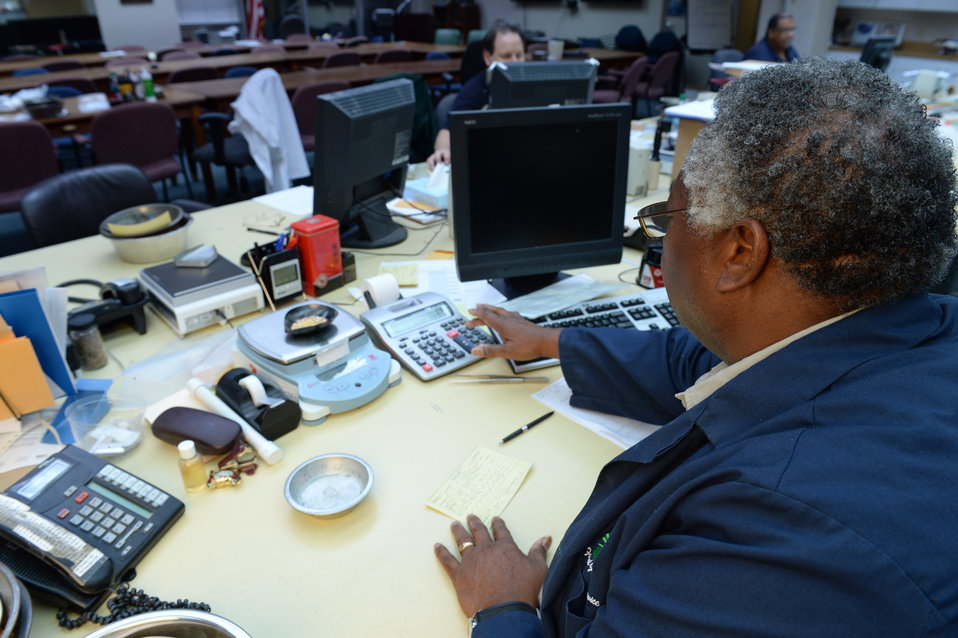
A U.S. Department of Agriculture (USDA) Grain Inspection, Packers and Stockyards Administration (GIPSA) Federal Grain Inspection Service (FGIS) scientist tests corn at the FGIS inspection laboratory in New Orleans, LA on Monday, Nov. 18, 2013.